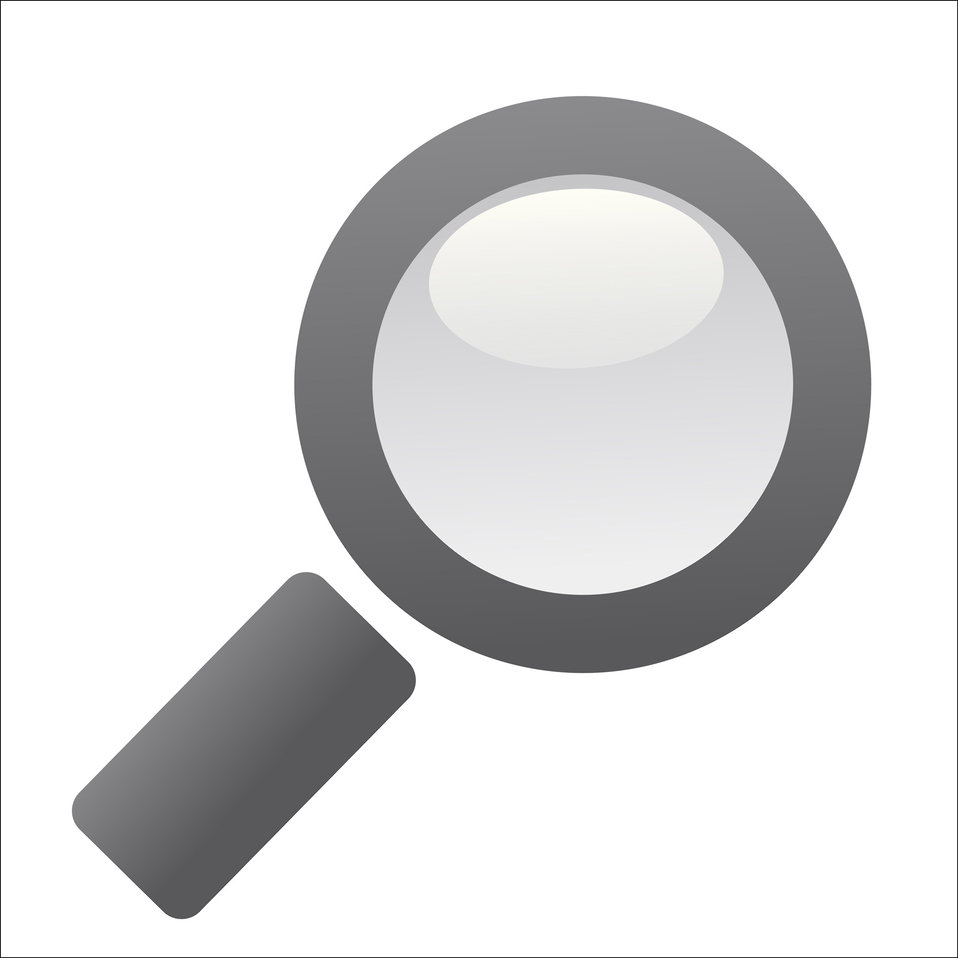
Magnifying glass clipart

Magnifying glass illustration clipart for scrapbooking.